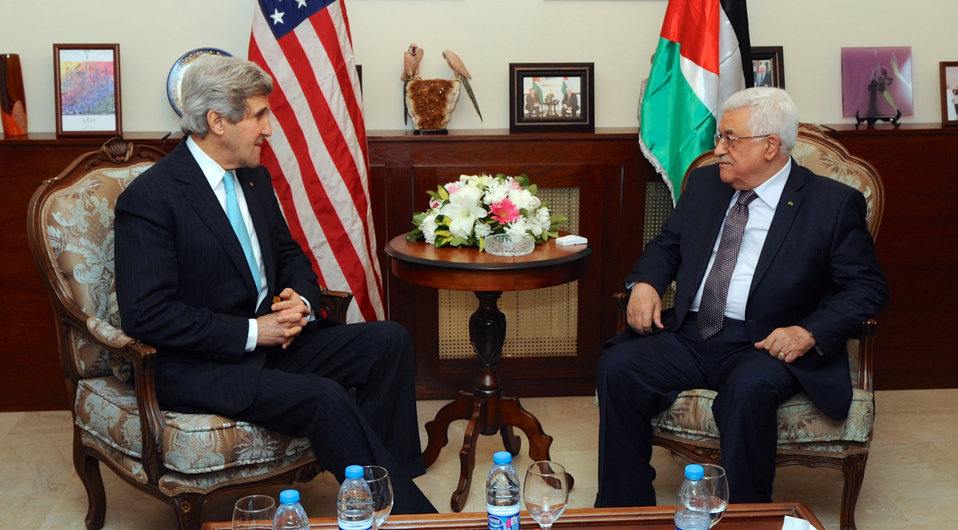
Secretary Kerry Meets With Palestinian Authority President Abbas in Amman

U.S. Secretary of State John Kerry chats with Palestinian Authority President Mahmoud Abbas in Amman, Jordan, on March 26, 2014, before a working dinner focused on Middle East peace negotiations with the Israeli government.